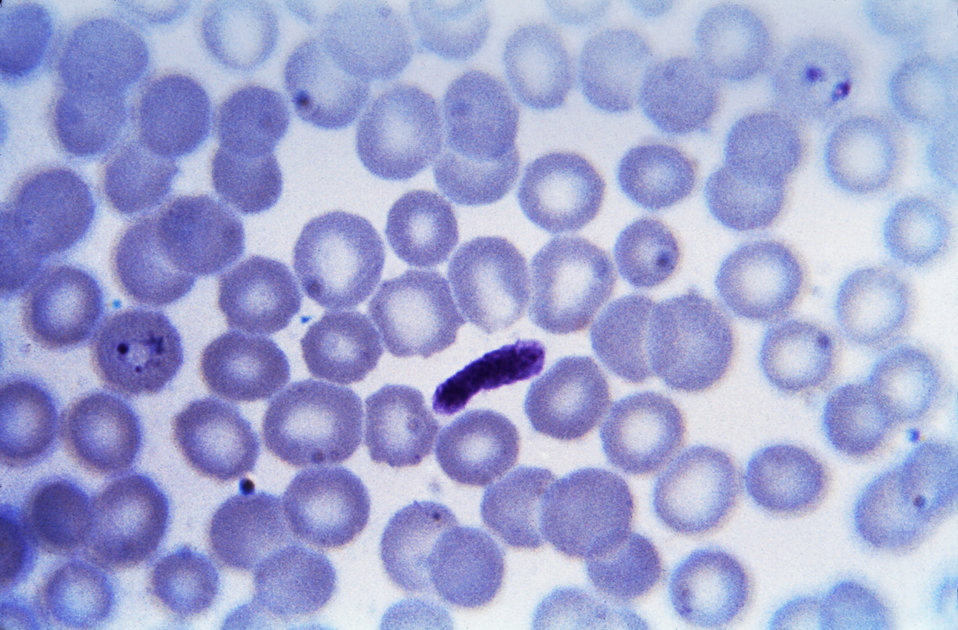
This thin film Giemsa stained micrograph reveals a young, growing P. vivax trophozoite (Lt), and a platelet stack (Cntr).